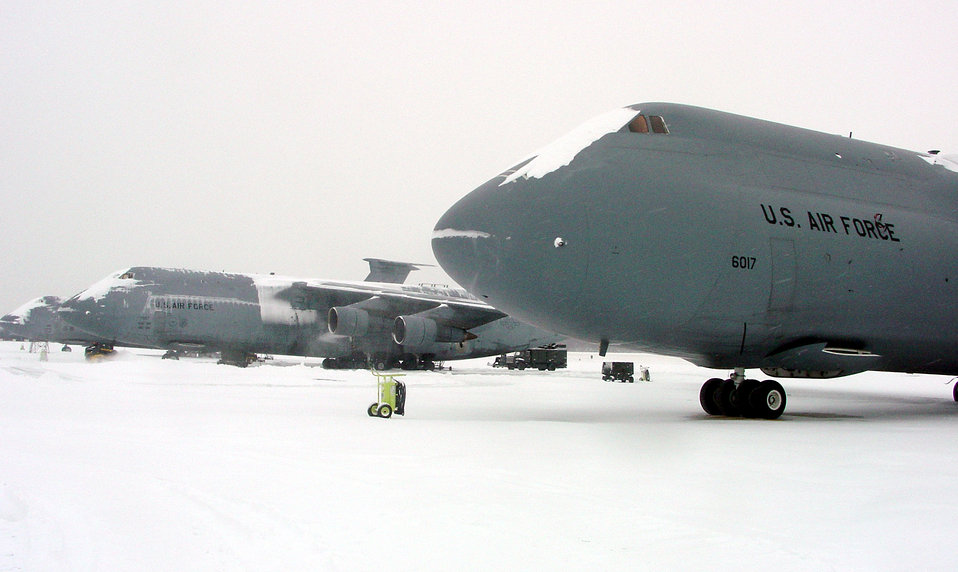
Snowy night

DOVER AIR FORCE BASE, Del. -- Five inches of snow fell overnight covering the flightline and aircraft here. People from the 436th Aircraft Maintenance Squadron and 436th Civil Engineer Squadron worked Jan. 26 to keep the runway and flightline operational. More adverse weather is expected over the next 24 hours.